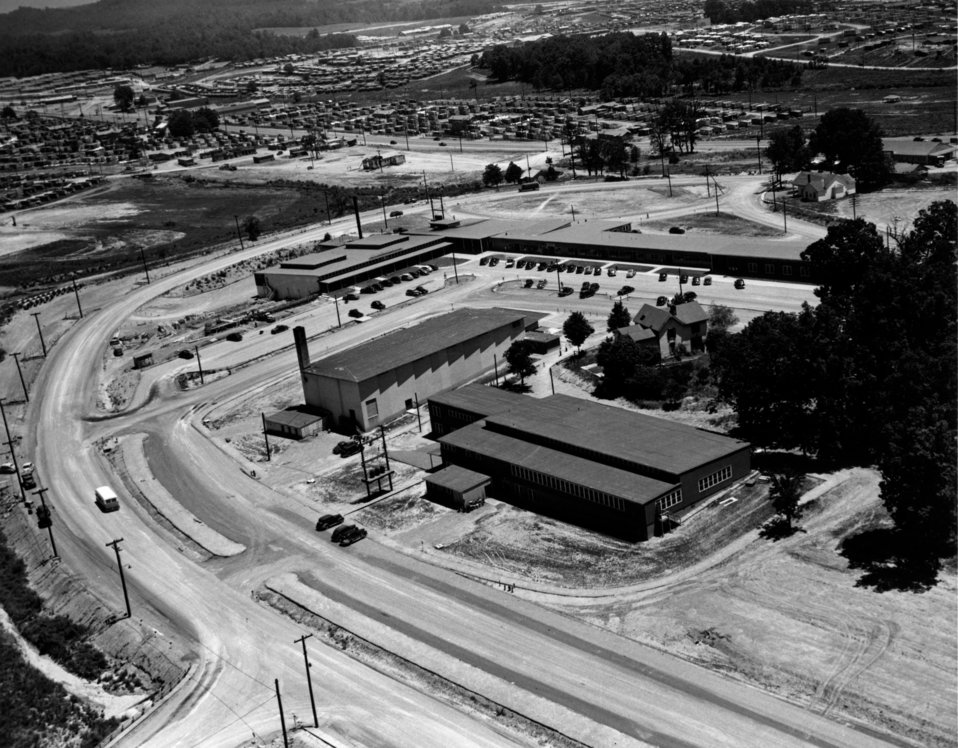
Aerial of Oak Ridge